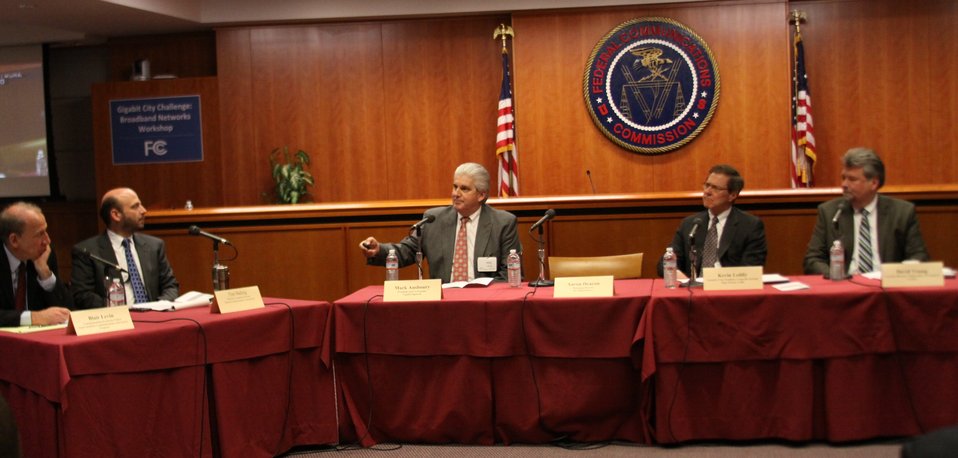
March 27, 2013 Gigabit City Challenge: Broadband Networks Workshop Panel 3: Innovation in Demand Aggregation